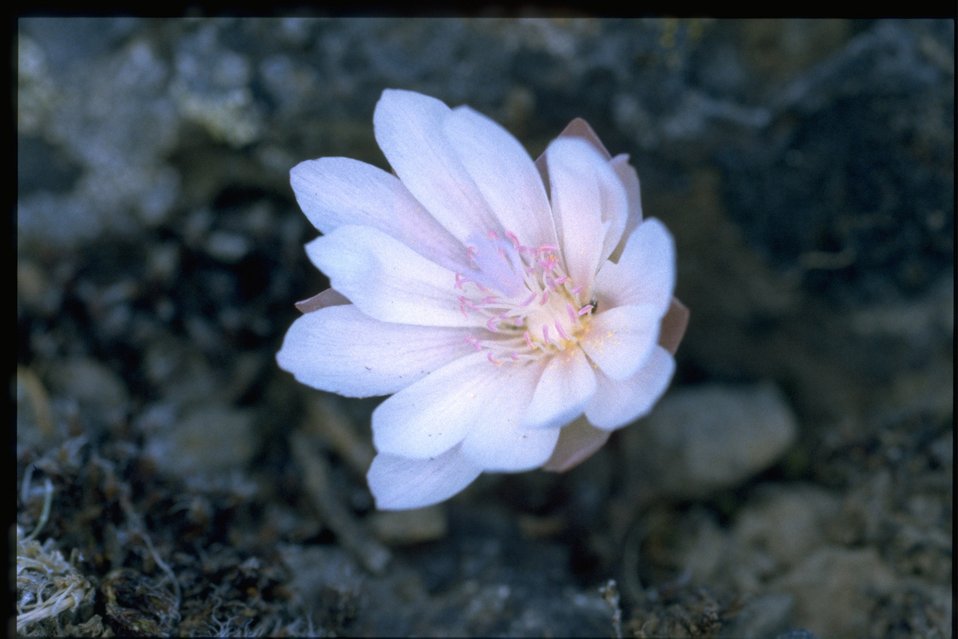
Closeup shot of bitter root (Lewisia rediviva).